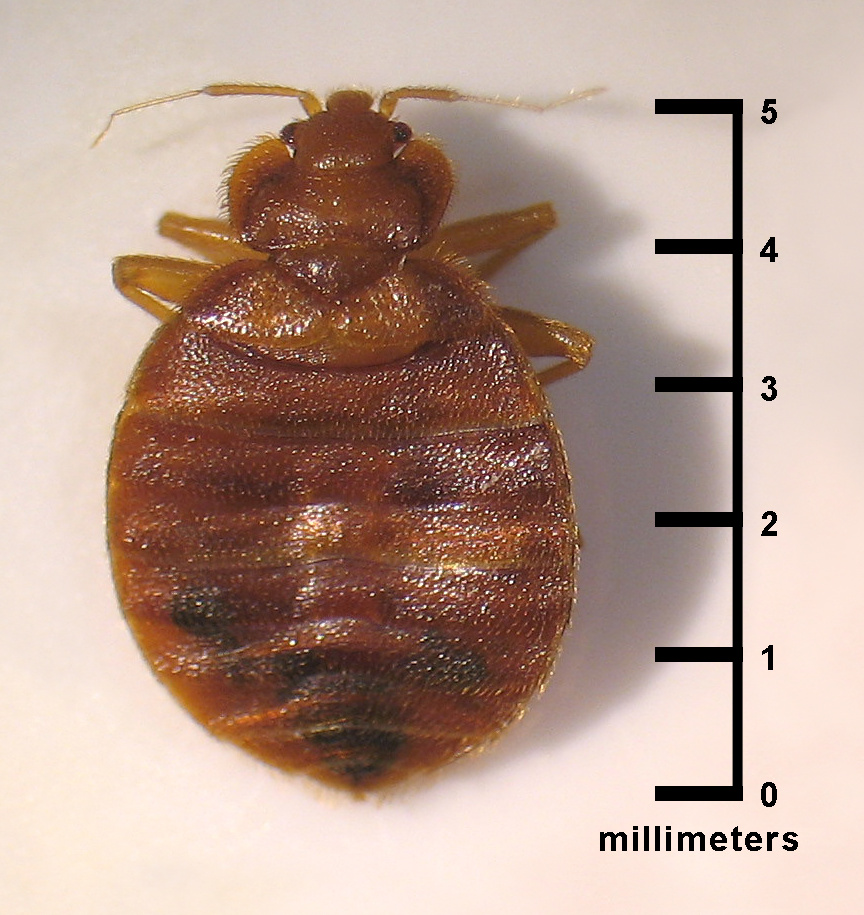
This image depicts a dorsal view of an adult, Cimex lectularius bed bug.